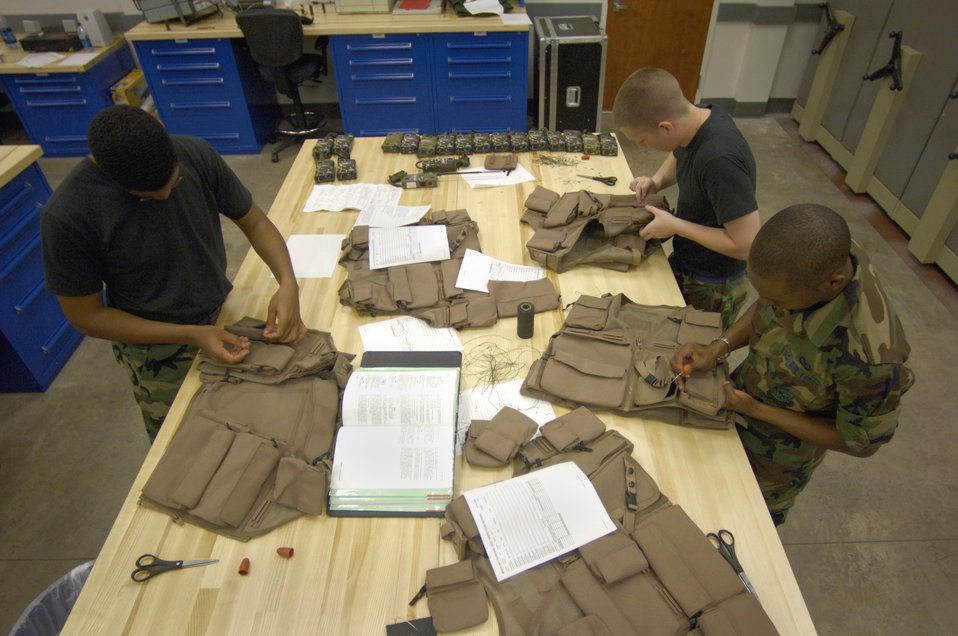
Life support

HICKAM AIR FORCE BASE, Hawaii (AFPN) -- Airman Basic John Williams, Airman Michael McLaughlin and Airman Basic Christian White sew down pockets on air ace survival vests. The life support shop is a combination of Hawaii Air National Guard and active-duty Airmen who support the 15th Airlift Wing, 154th Wing and transient aircraft. All three Airmen are with the 15th Operations Support Squadron.